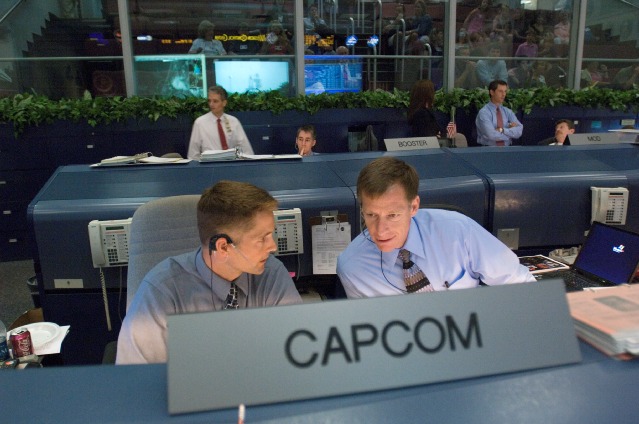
Air Force astronaut

Astronauts Christopher Ferguson (right), a Navy captain, and James Dutton Jr., a lieutenant colonel in the Air Force, sit at the Spacecraft Communicators console in the space shuttle flight operations control room of the Johnson Space Center in Houston, Texas, Aug. 8, 2007. The astronauts were monitoring a launch of the Space Shuttle Endeavour several hundred miles away in Florida.